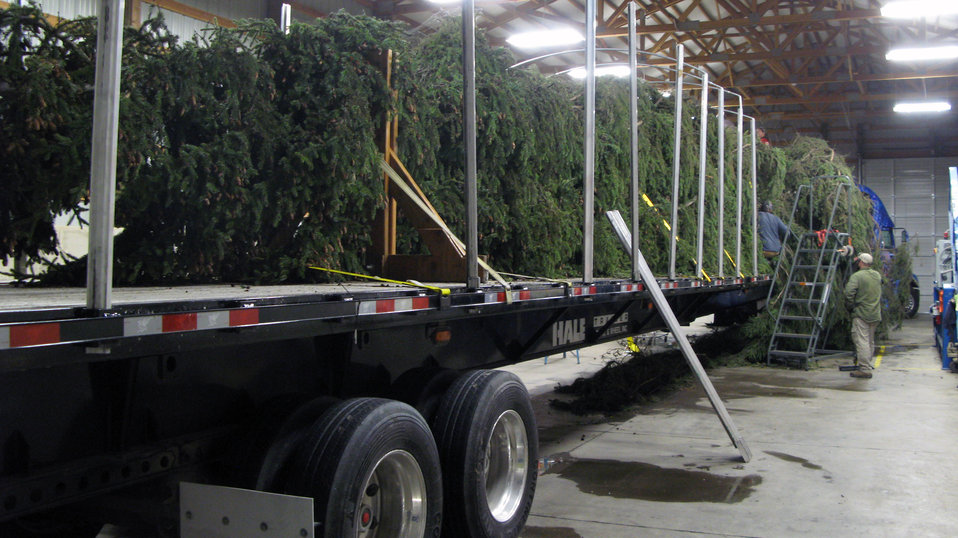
Colville National Forest personnel prepare the official 2013 Capitol Christmas Tree for transport on Nov. 3, 2013. The Capitol Christmas tree is an 88-foot tall Engelmann spruce that was harvested at Colville National Forest in Washington on Nov. 1, 2013.